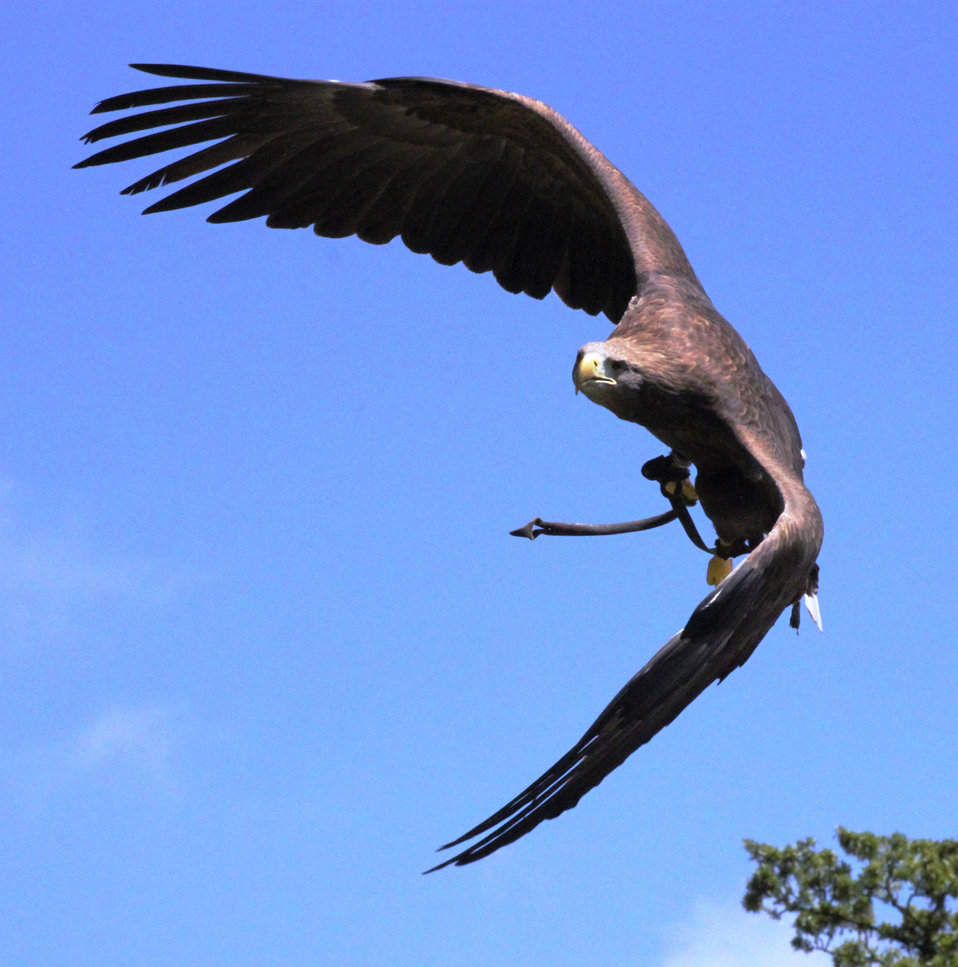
Free flight

Bird of prey in free flight.